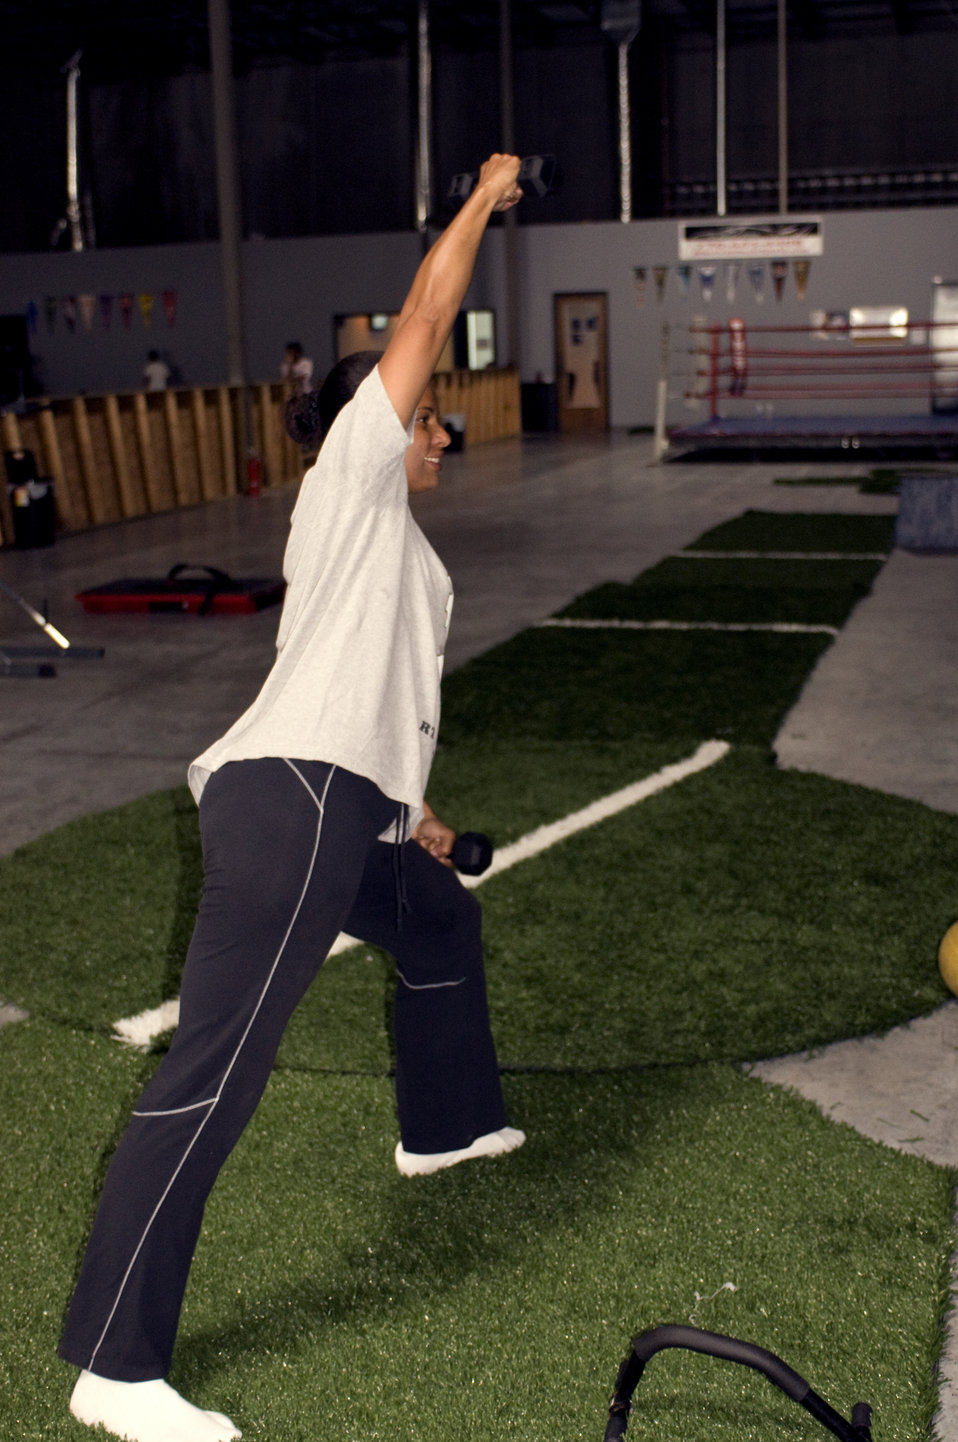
Photographed in an indoor gymnasium, this young woman was warming up prior to her vigorous exercise routine. Here she was, holding a light-weight dumbbell in each hand, and was working her core, or torso muscles by bending sideways at the hip, thereby, stretching the flank, or side muscles on the opposite side. Her right arm was extended over her head, and her left was bent at the elbow, with her fist on her left thigh, weights in hand.